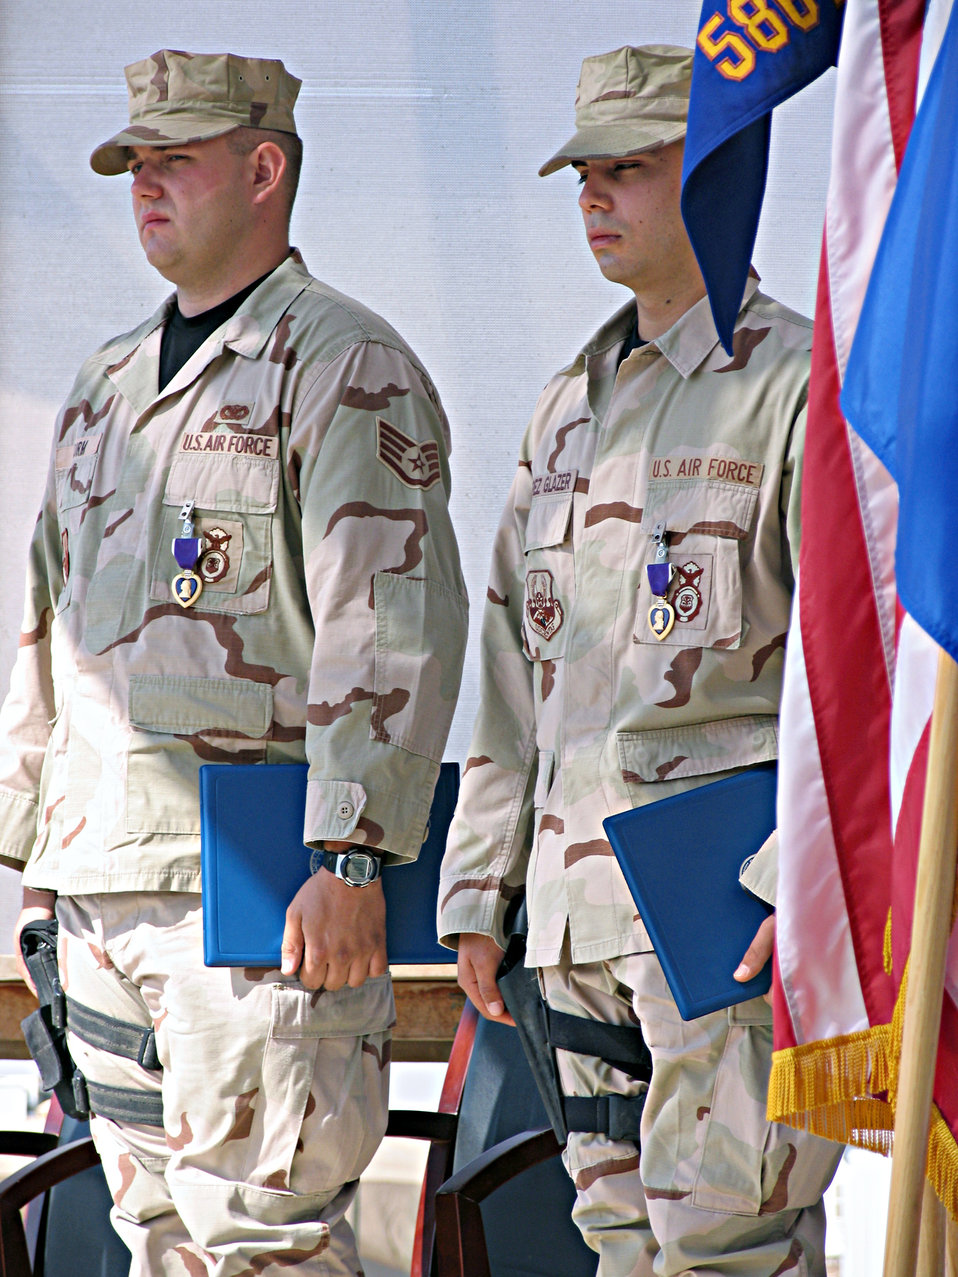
Ceremony

CAMP BUCCA, Iraq - Staff Sgt. Rory Sturm and Airman Kevin Perez Glazer were presented Purple Hearts at a ceremony here Nov. 14 for wounds received when their patrol Humvee was struck by an improvised explosive device Oct. 16. Both Airmen are deployed to the 586th Expeditionary Security Forces Squadron Area Security Operations.